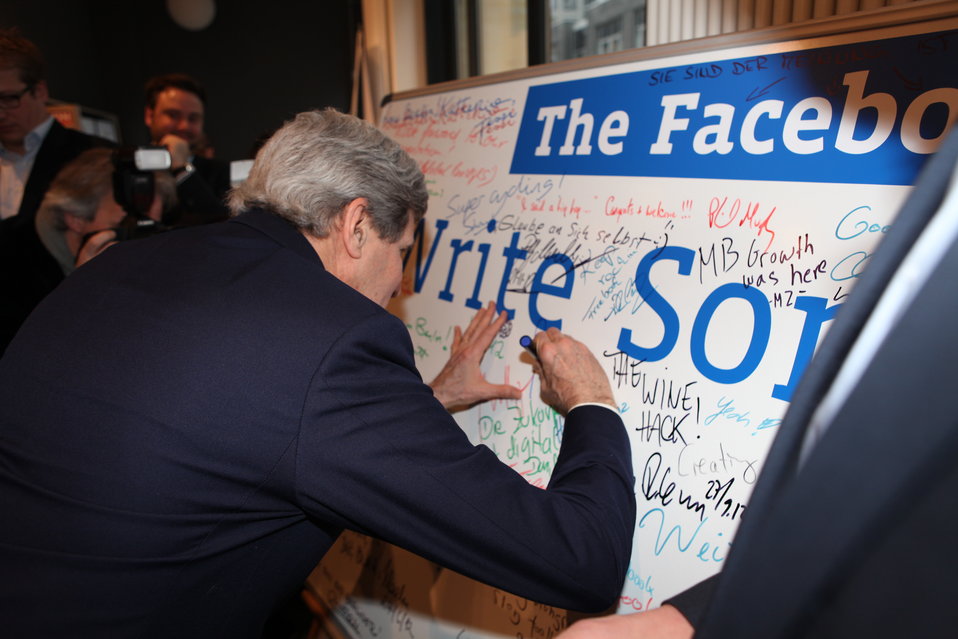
Secretary Kerry Signs a Facebook Wall

U.S. Secretary of State John Kerry signs a Facebook Wall after speaking at his first Youth Connect event with moderator/journalist Cherno Jobatey in Berlin, Germany, February 26, 2013.